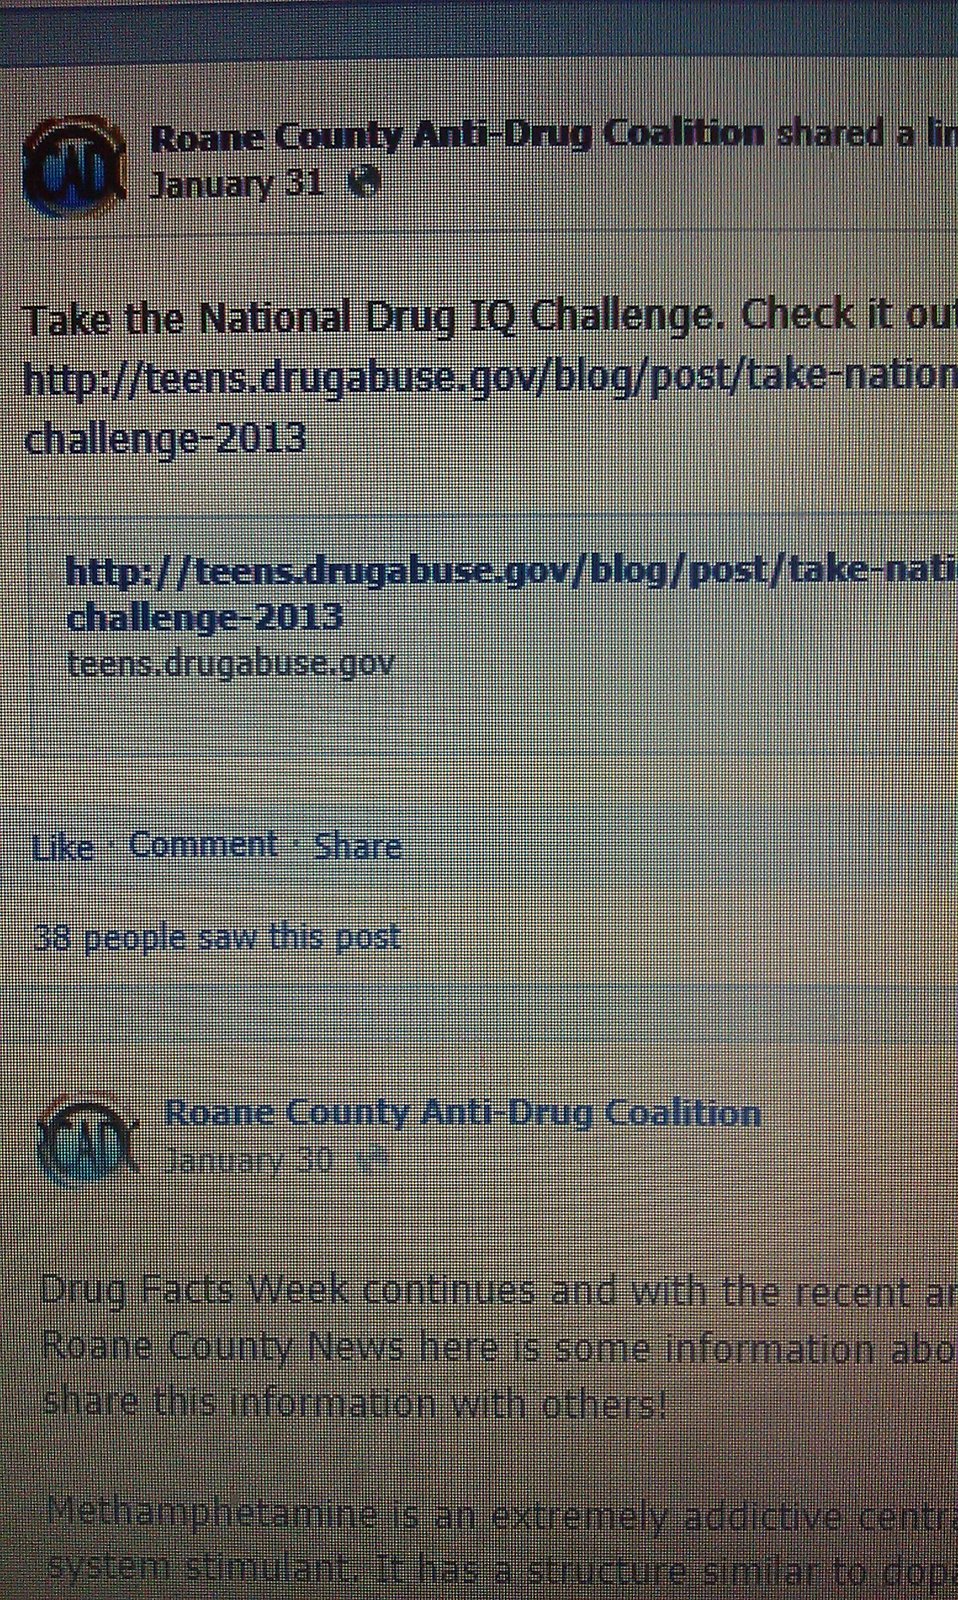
Tennessee's IQ Challenge NDFW 2013

Kingston,Tenn. Roane County Anti-Drug Coalition, 2013 National Drug Facts Week activities.